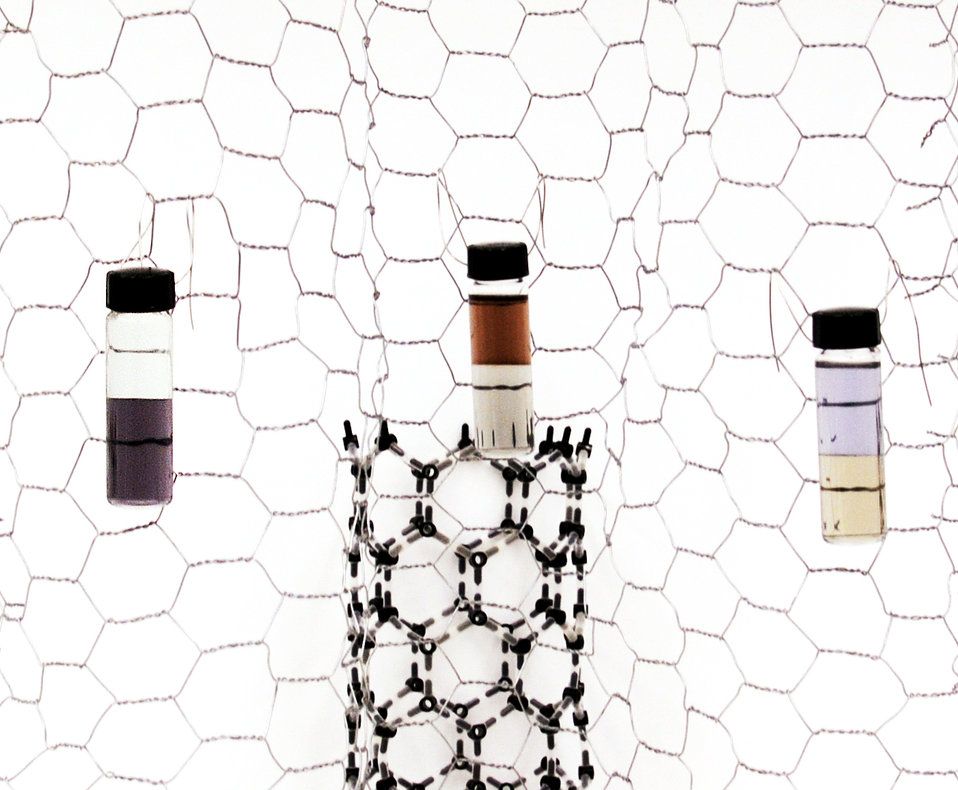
Three examples of partitioning carbon nanotubes in liquid phases. Left: nanotubes partitioned by diameter. Smaller diameters, on the bottom, appear purple. Center: partitioned between metals (amber, top) and semiconductors. Right: A sample with different diameter range partitioned between metals (yellow) and semiconductors. Color differences are due to differences in electronic structure.